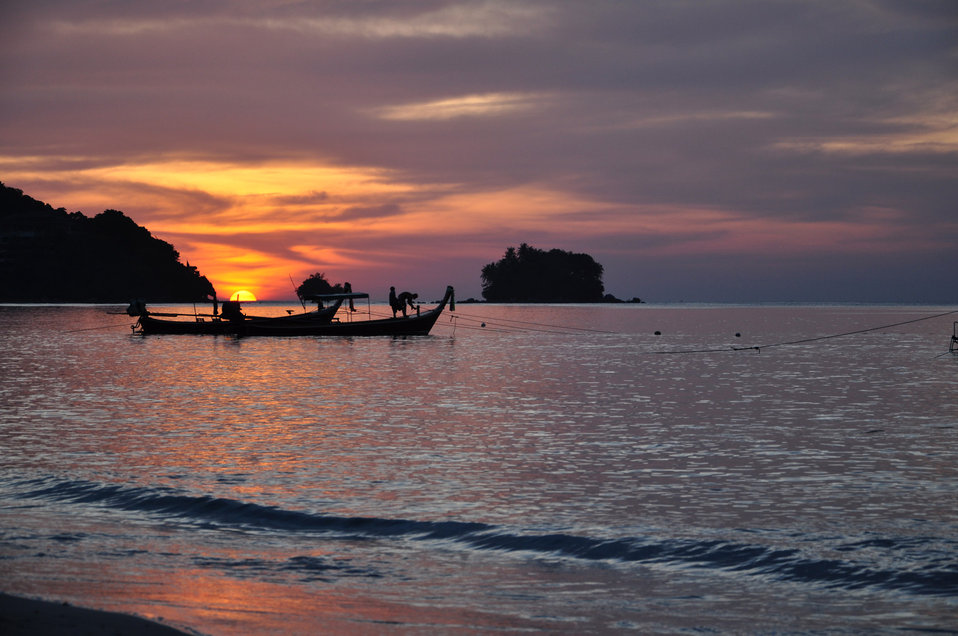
Sunset at nai yang beach - phuket.